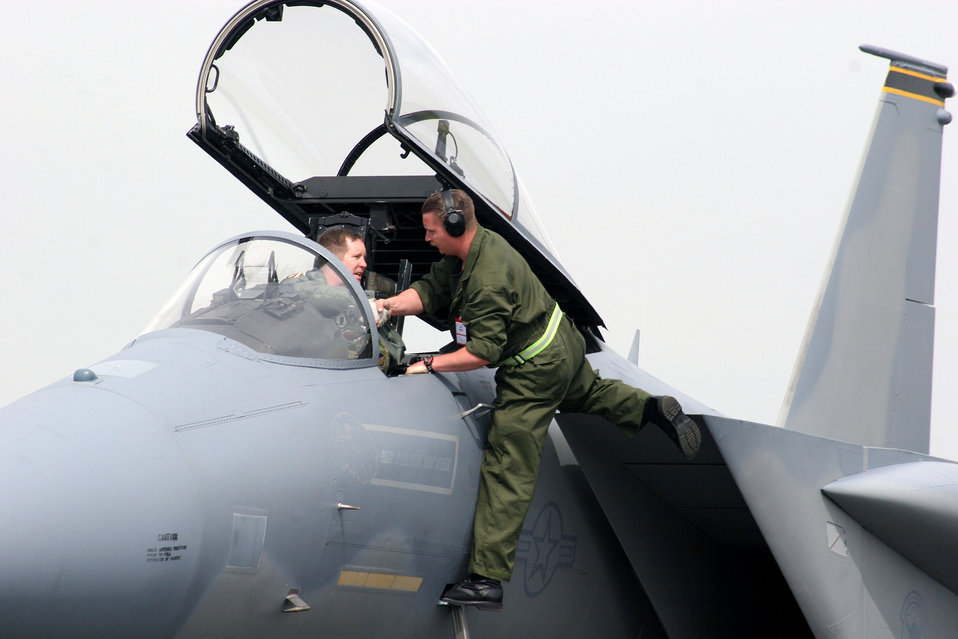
U.S. opens Berlin Air Show with

Air Force Lt. Col. Steve Neuser is greeted by a German crew chief shortly after he arrived in his F-15 Eagle at the Berlin Air Show on May 15, 2006. Various models of U.S. military aircraft and about 60 support personnel from bases in Europe and the United States are attending the air show at Berlin-Schoenefeld Airport May 16-21. Colonel Neuser is a pilot with the 493rd Fighter Squadron at Royal Air Force Lakenheath, England.